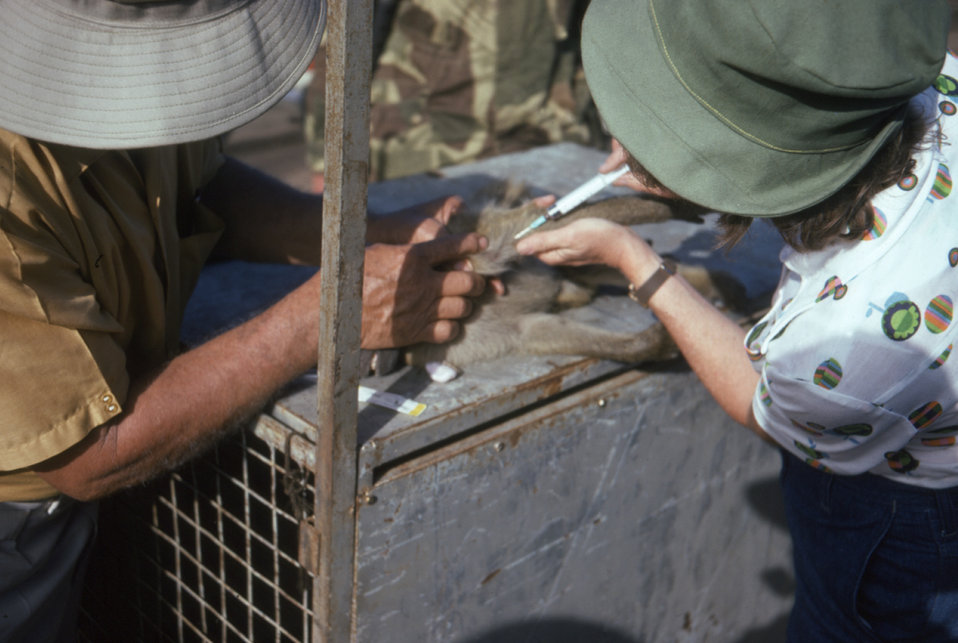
This photograph shows P. Geldenhuys (Lt), and M. Isaacson extracting a blood sample from a green monkey, Cercopithecus aethiops, during a Marburg virus investigation.